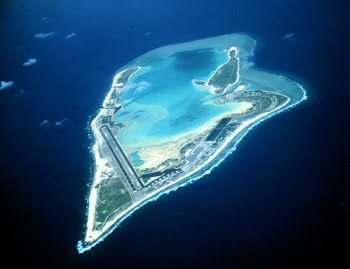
Wake Atoll NWR is the northernmost atoll in the Marshall Islands geological ridge and perhaps the oldest and northernmost living atoll in the world.